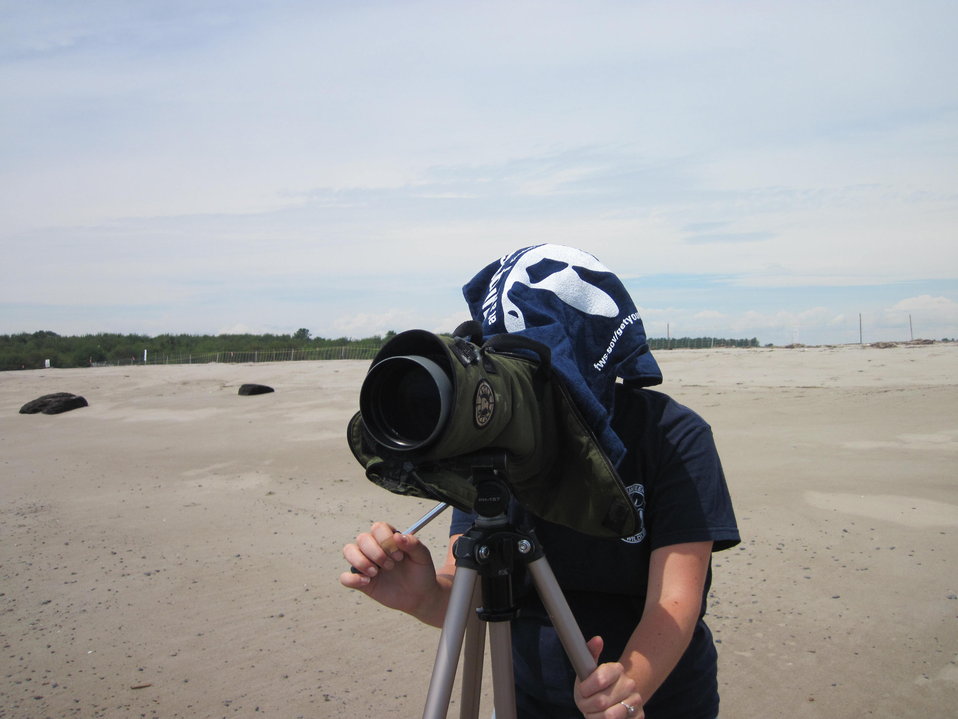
Get Your Goose On!

Intern Bri Rudinsky using the spotting scope. The GYGO towel helps?